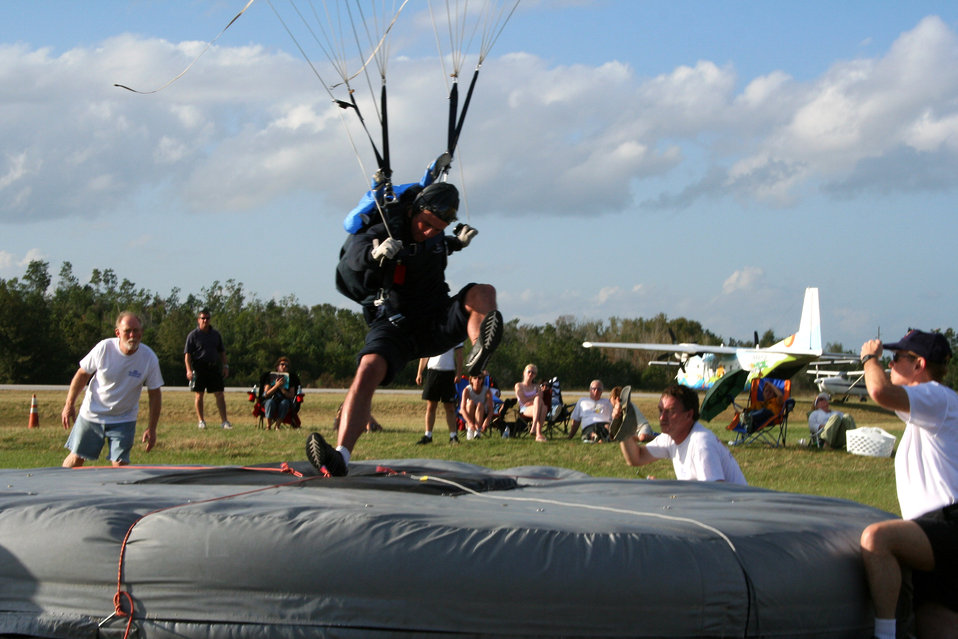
Wings of Blue win national championship

U.S. Air Force Academy Cadet 1st Class Mike Bush touches down in the individual accuracy event at the National Collegiate Parachuting Championship held Dec. 27 to Jan. 1 at Lake Wales, Fla. Cadet Bush was crowned the overall 2006 National Champion in the competition.